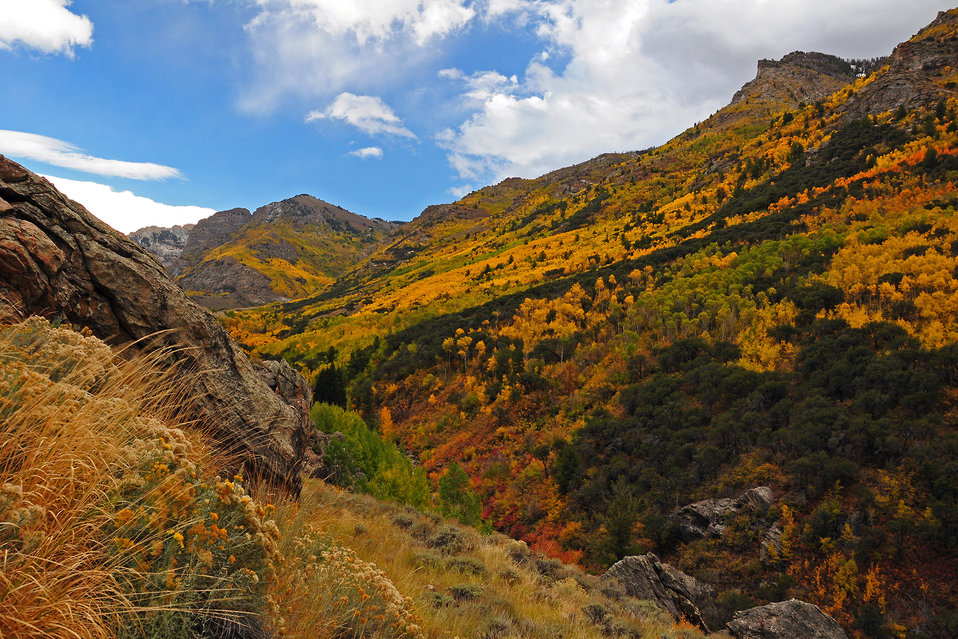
The rugged landscape of Lamoille Canyon is softened by the warm autumn colors found in the Ruby Mountain Ranger District on the Humboldt-Toiyabe National Forest in northeastern Nevada.